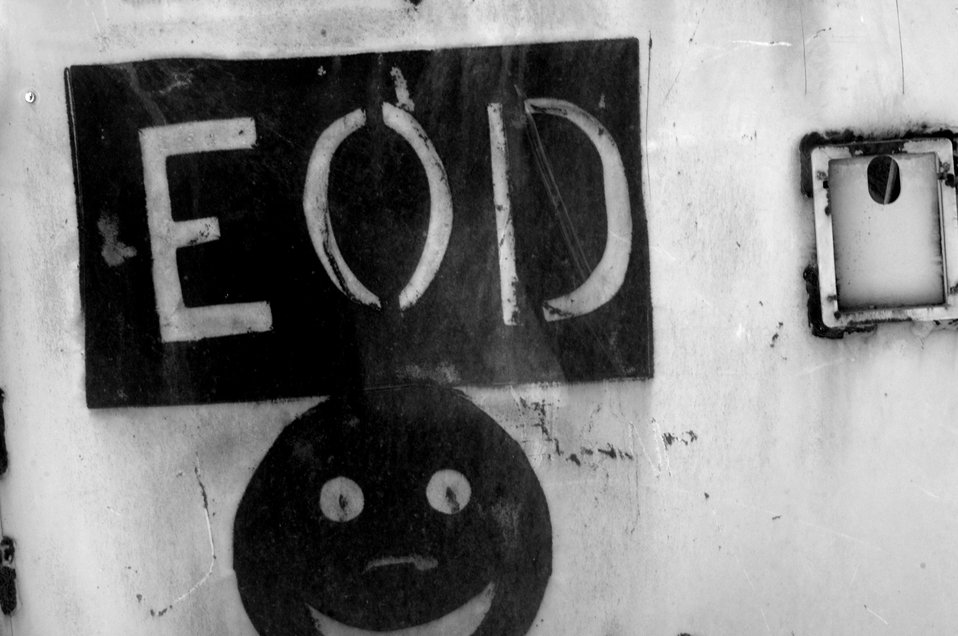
EOD Airmen

An explosive ordnance disposal logo is painted on an old vehicle door at one of the ranges on Ali Air Base, Iraq. U.S. Army and Air Force EOD technicians save money by disposing of unserviceable ammunition on base as opposed to shipping it back to the U.S.